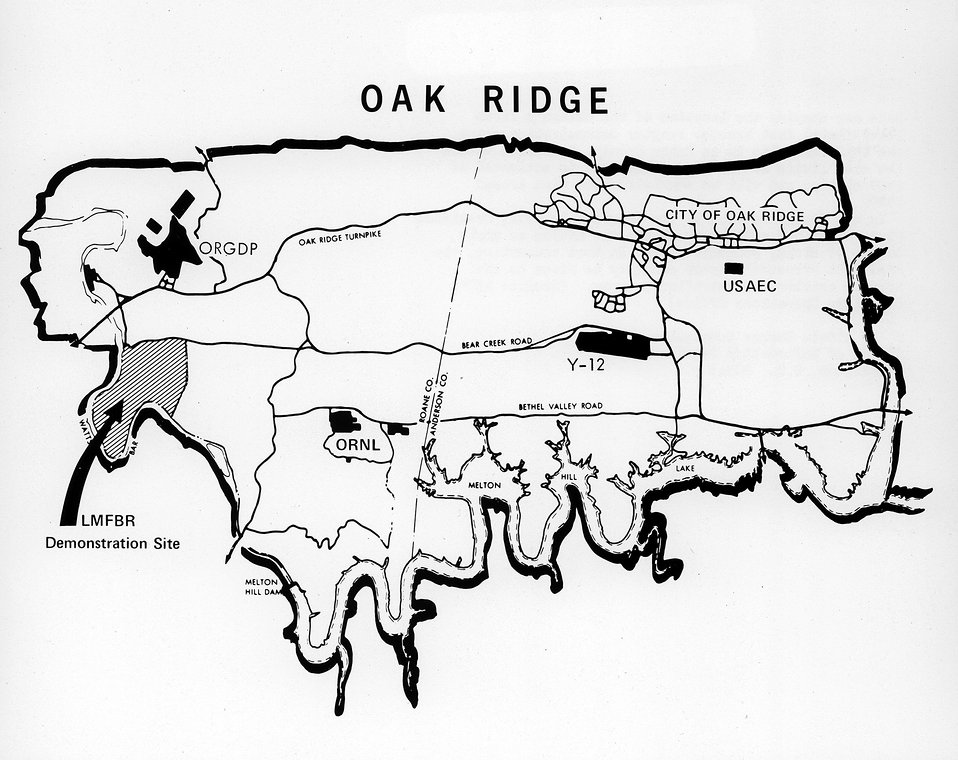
Site map showing the location of the nation's first liquid metal fast breeder reactor demonstration plant. The 1360 acre site is in Roane County, Tennessee within the city of Oak Ridge. c. 1972